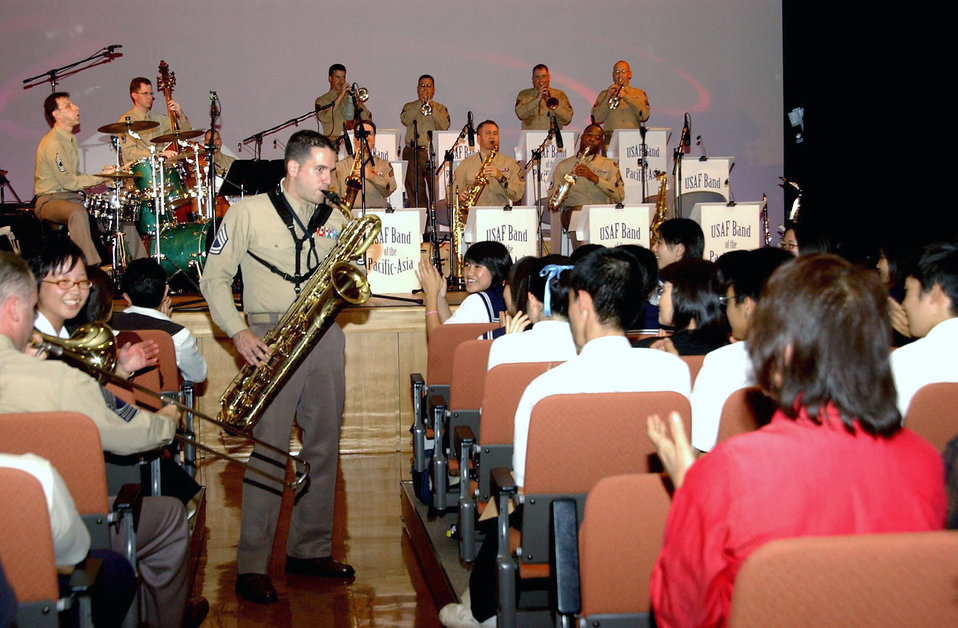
Band builds international relations through music

Staff Sgt. Joe Wagner interacts with the audience during a concert in Tsugaru-City, Japan, Sept. 9. The band played more than 20 swing and contemporary jazz pieces before a capacity crowd. The Pacific Showcase band is stationed at Yokota Air Base, Japan, and plays throughout the region at military and civilian events.